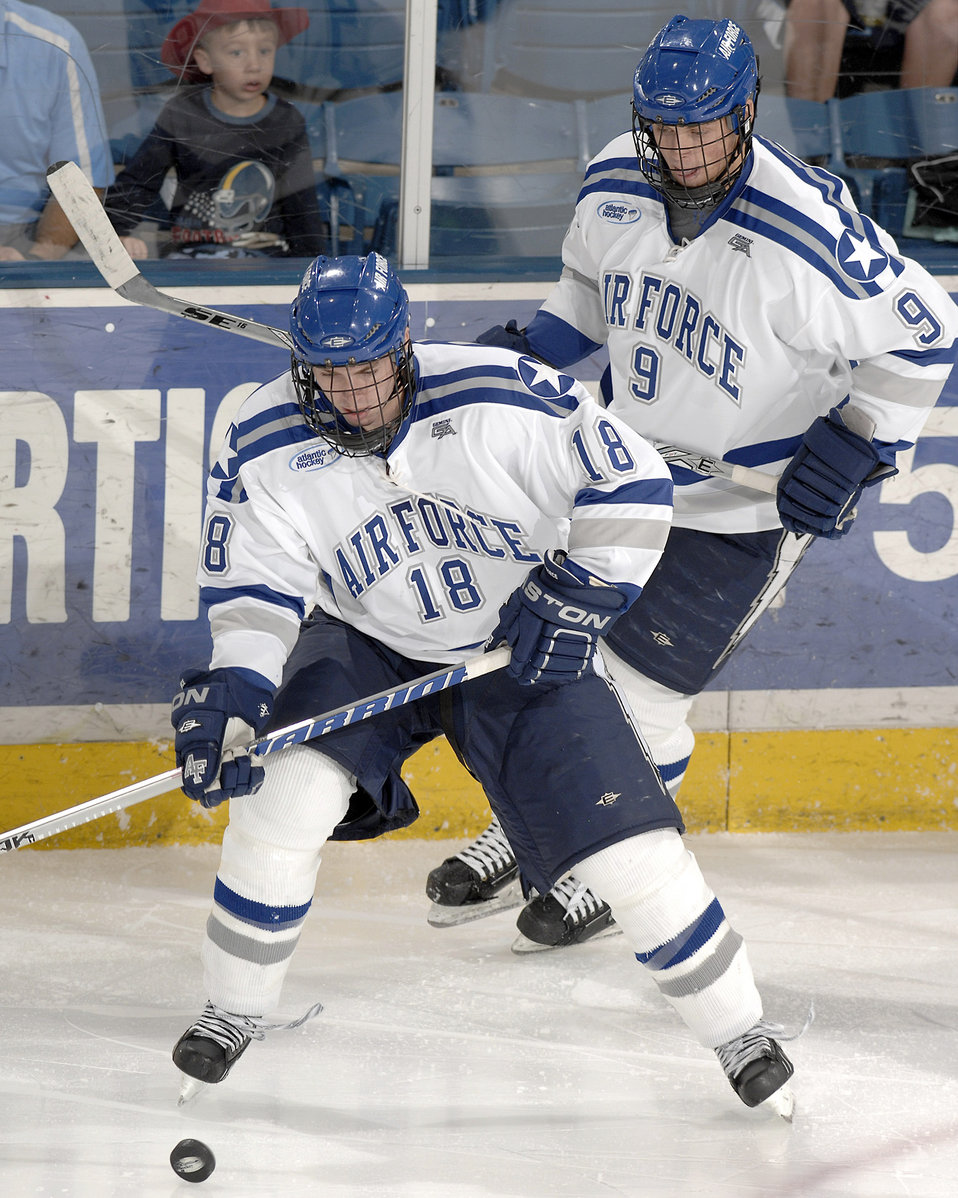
Falcons defeat the Pronghorns

Falcons freshman George Michalke controls the puck during a hockey exhibition game against the University of Lethbridge Oct. 4, 2010, at the U.S. Air Force Academy's Cadet Ice Arena in Colorado Springs, Colo. The Falcons defeated the Pronghorns 4-3 in overtime.